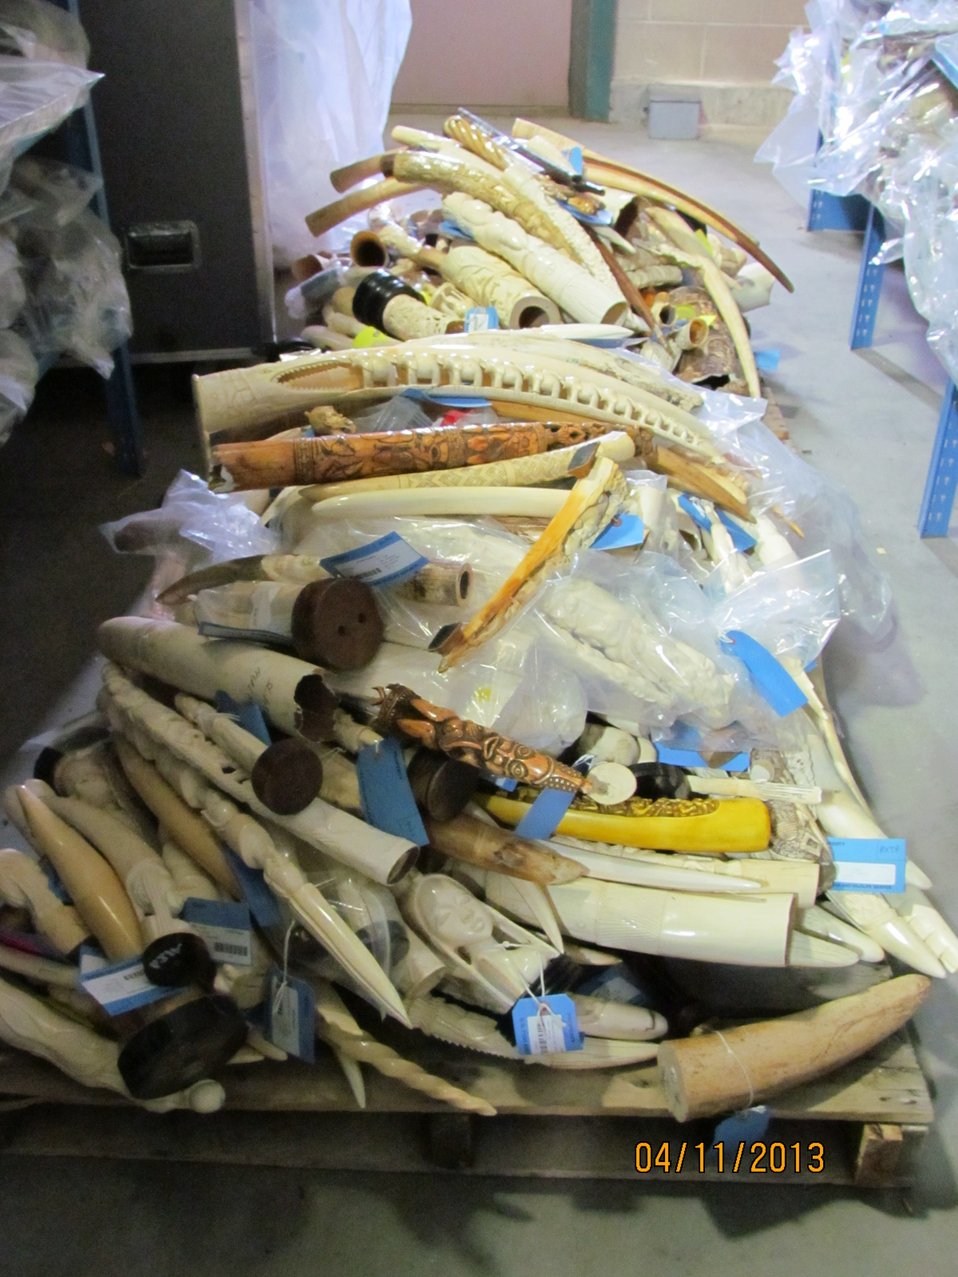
Pallet of raw, polished and carved tusks